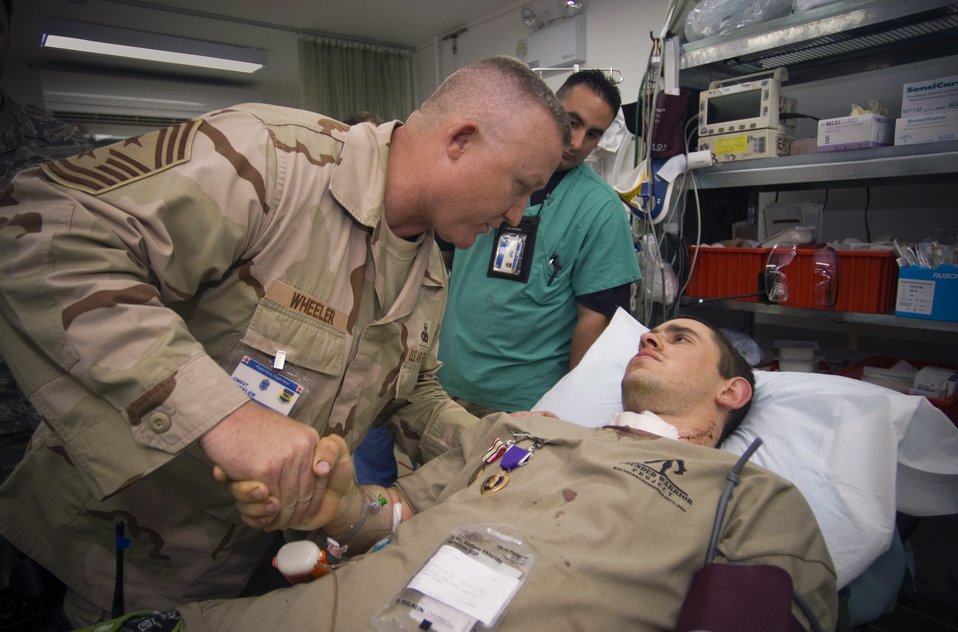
Thank you

Airman 1st Class Michael Brady is thanked for his service by Chief Master Sgt. Paul Wheeler Oct. 14 at the Air Force Theater Hospital at Balad Air Base, Iraq. Airman Brady was wounded by sniper fire while on patrol in Ad Diwaniyah, Iraq. Chief Wheeler is the 332nd Air Expeditionary Wing command chief.